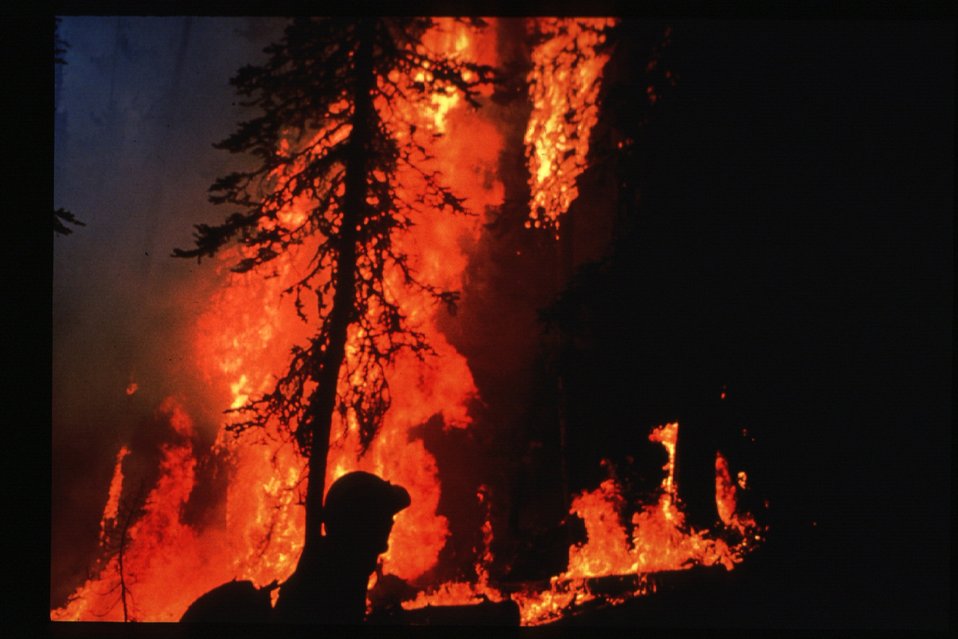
Boise Foothills Fire Danskin Mountains and South Fork of Boise River Wild Fire Fighter Four River Field Office LSRD Lower Snake River District